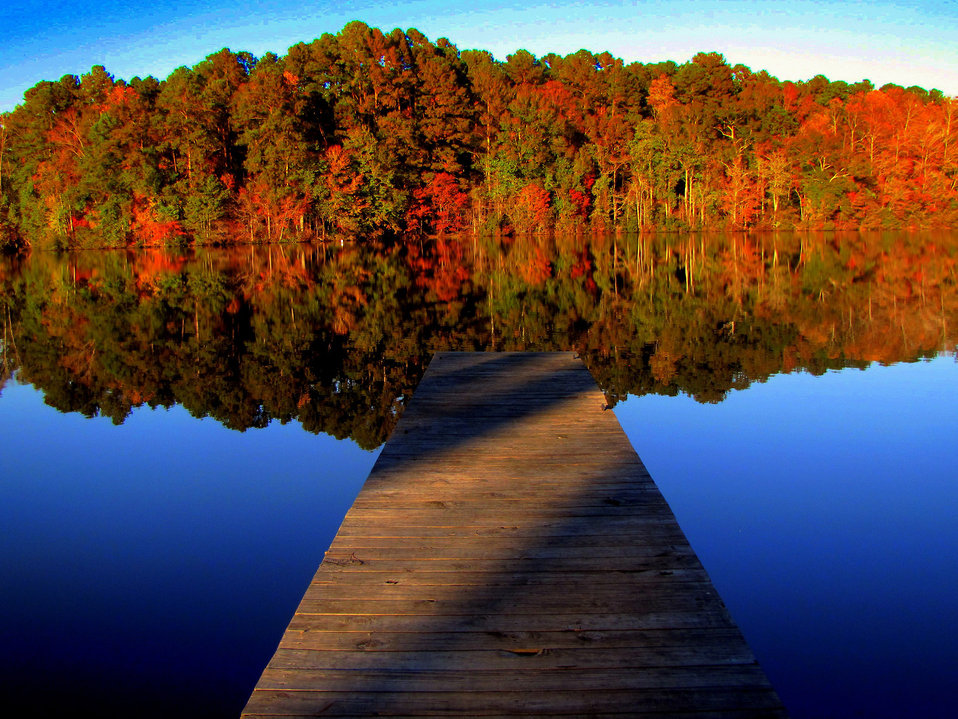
Legion lake

Water park.